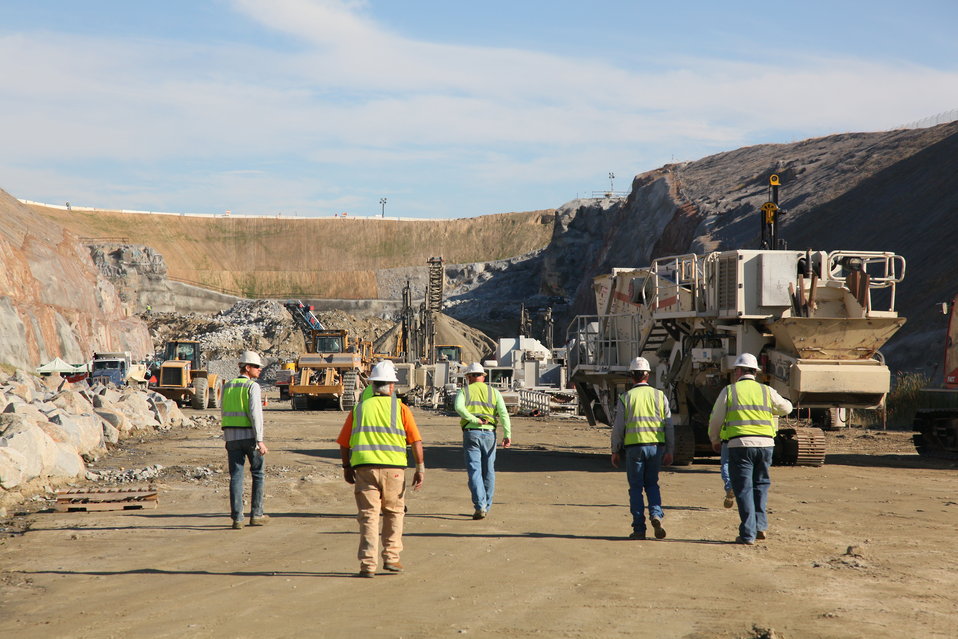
Continued progress at the Folsom auxiliary spillway

Heavy equipment operators head back to their machinery after the daily blasting is completed for the Folsom Dam auxiliary spillway in Folsom, Calif., Nov. 10, 2011. The spillway will let Folsom Dam release water sooner and more safely. The project is part of the Folsom Dam Joint Federal Project, a joint effort of the U.S. Army Corps of Engineers Sacramento District, the U.S. Bureau of Reclamation, the Central Valley Flood Protection Board and the Sacramento Area Flood Control Agency to improve the safety of the dam and reduce flood risk for the greater Sacramento area.